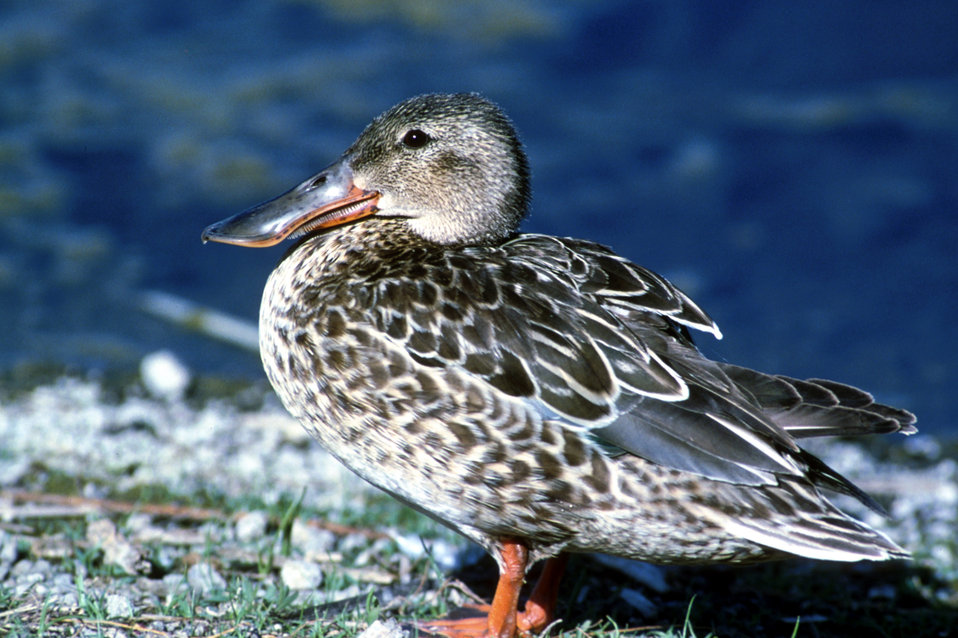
Female northern shoveler Lower Klamath NWR, Siskiyou County, California

Scientific Name: Anas clypeata

Spring and fall migrations often bring huge numbers of waterfowl to the Klamath Basin. Up to three quarter of the Pacific flyway population of waterfowl, including large numbers of Northern Shoveler
ducks, move through the Klamath Basin each spring and fall.